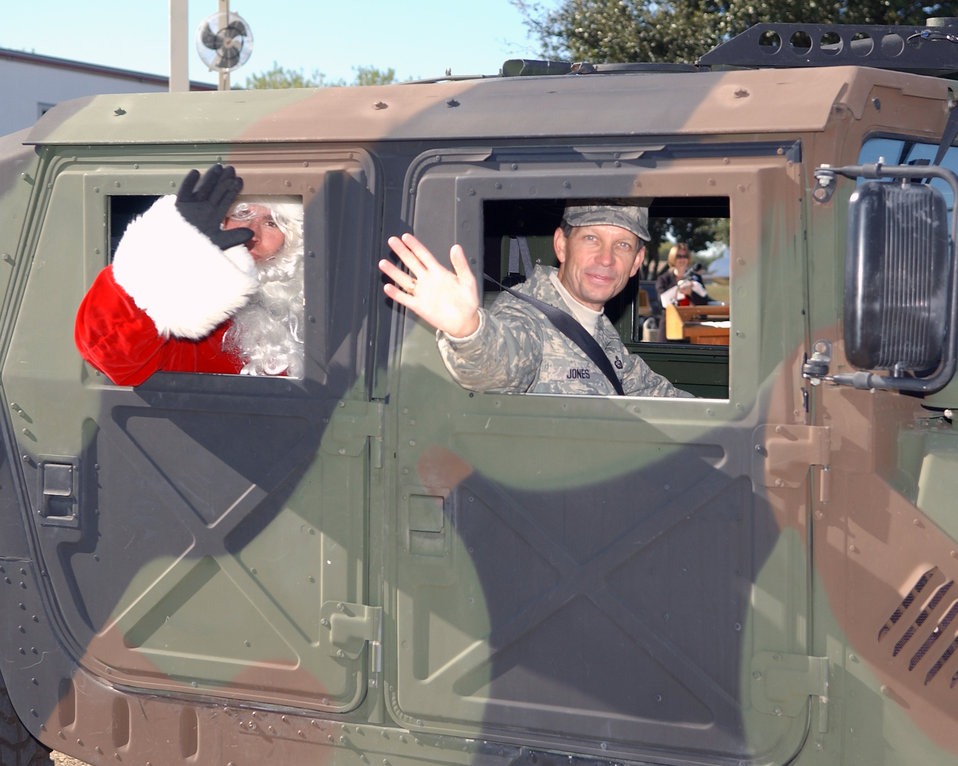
Lackland, Texas join forces for safety

Brig. Gen. Darrell D. Jones and Santa head out in a military vehicle after being part of a statewide campaign to remind people to not drink and drive Dec. 4 at Lackland Air Force Base, Texas. The Texas Department of Transportation used Lackland AFB as a backdrop to announce the beginning of its annual four-week drunk driving prevention campaign. This is the 10th year of the Texas Department of Transportation's holiday public education campaign. General Jones is the commander of the 37th Training Wing.